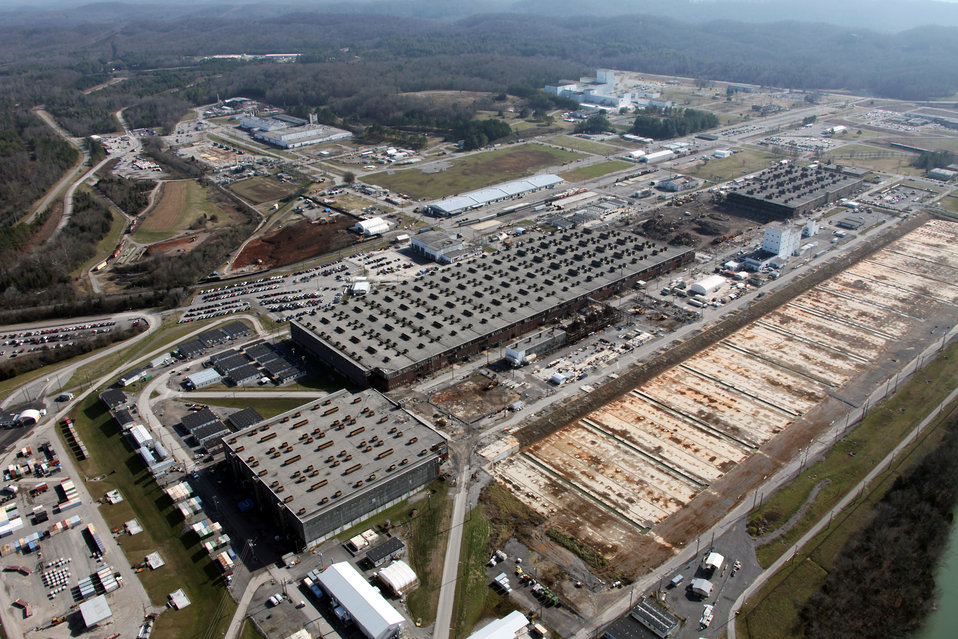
Oak Ridge Finds Ways to Remove K-25 Faster, Cheaper

K-25, once the world’s largest building under one roof, reflects less of its former title every day. Due to the partnership between the U.S Department of Energy (DOE) Office of Environmental Management (EM) cleanup team and Oak Ridge’s prime environmental management contractor, URS | CH2M Oak Ridge, LLC (UCOR), the 44-acre, multi-level uranium-enrichment superstructure is in the advanced stages of demolition.